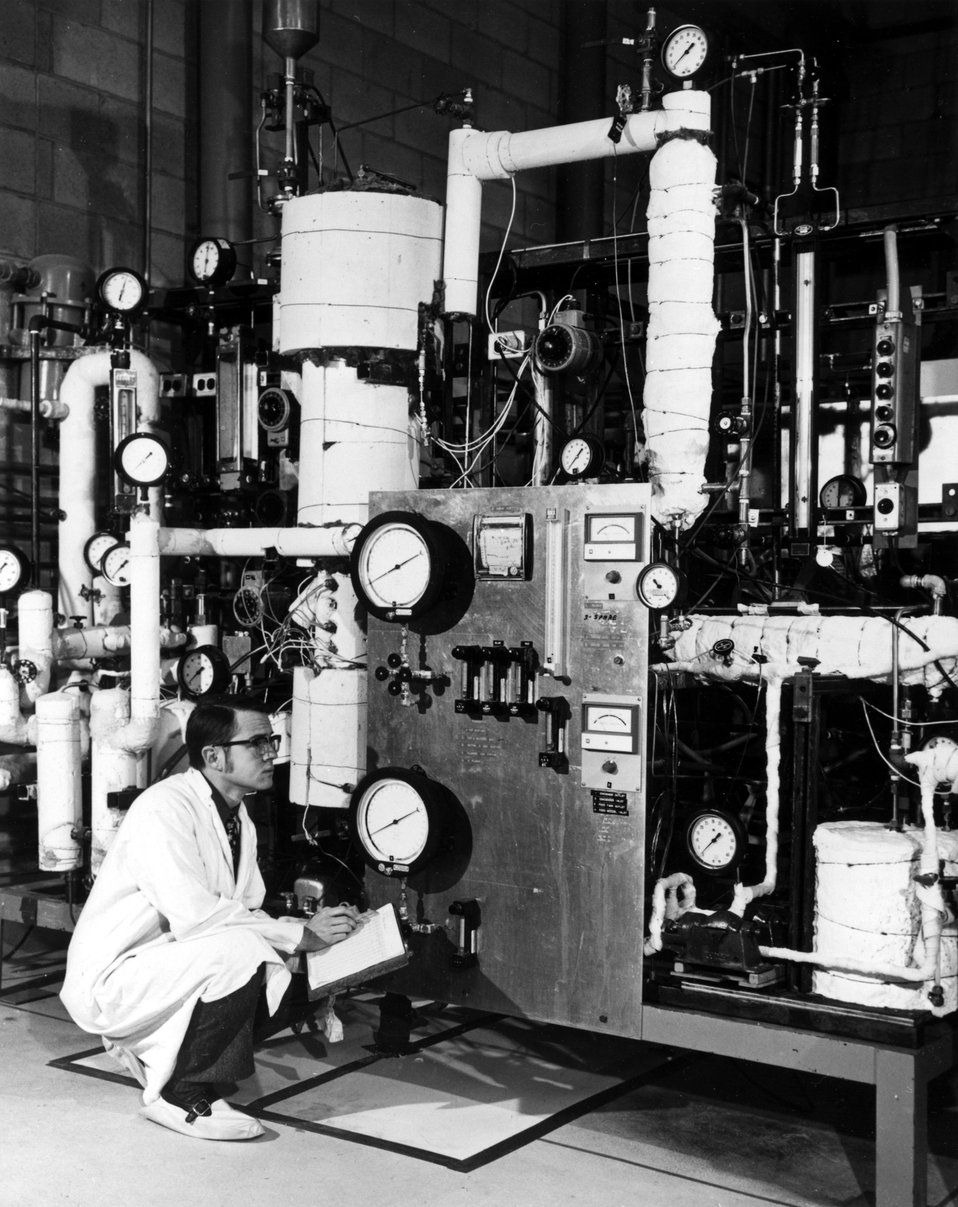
The fluidized bed evaporation process--successfully applied to the solidification of highly radioactive waste liquids in the Waste Calcining Facility (WCF)--is being adapted by scientists at the Energy Research and Development Administration's National Reactor Testing Station, Idaho. Circa 1972.